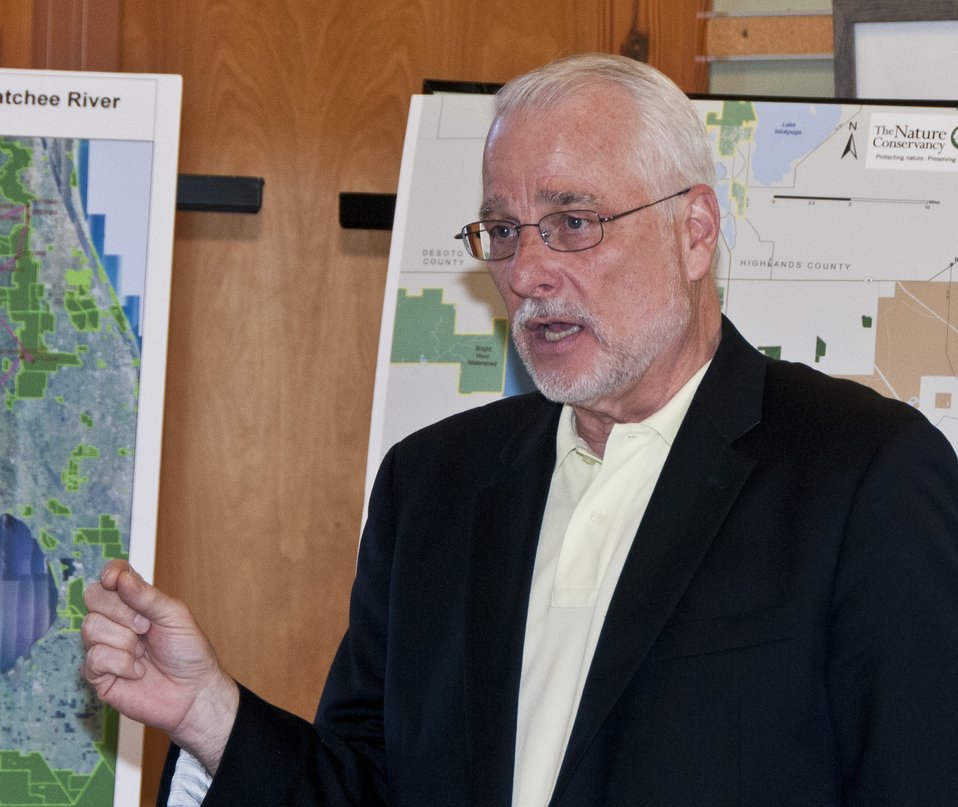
Natural Resources and Conservation Service Chief Dave White speaking before the American Prime Conservation project joint press conference in Kissimmee, Florida, on Wednesday, May 22, 2012.